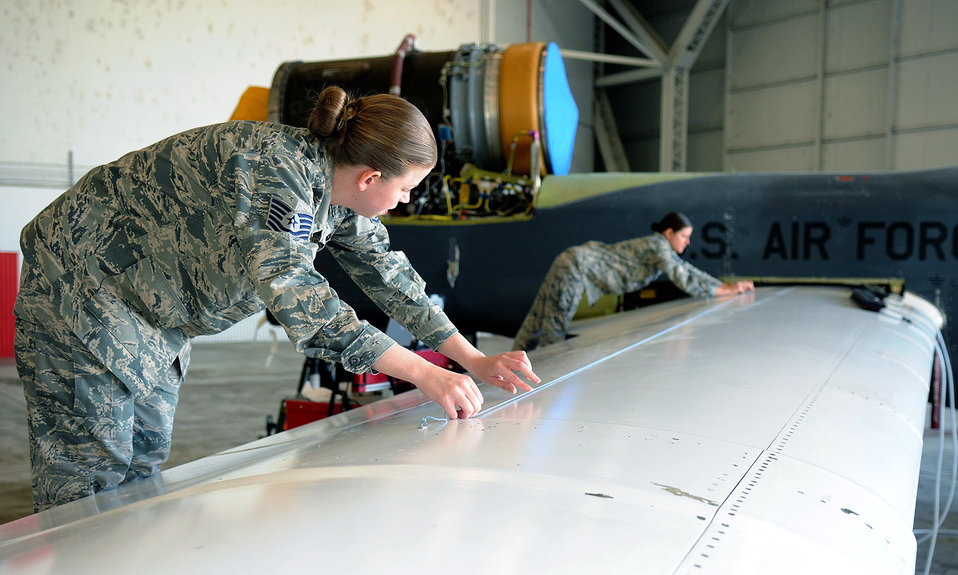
Getting it straight

Tech. Sgts. Sara Cole and Corrine Jefferies use a chalk line to map out a path for a Mobile Automated Ultrasound, or MAUS, machine, July 7, 2010, at Beale Air Force Base, Calif. The MAUS machine uses a track that suctions to the wing to reveal discrepancies. The Airmen are nondestructive inspection technicians with the 13th Reconnaissance Squadron.